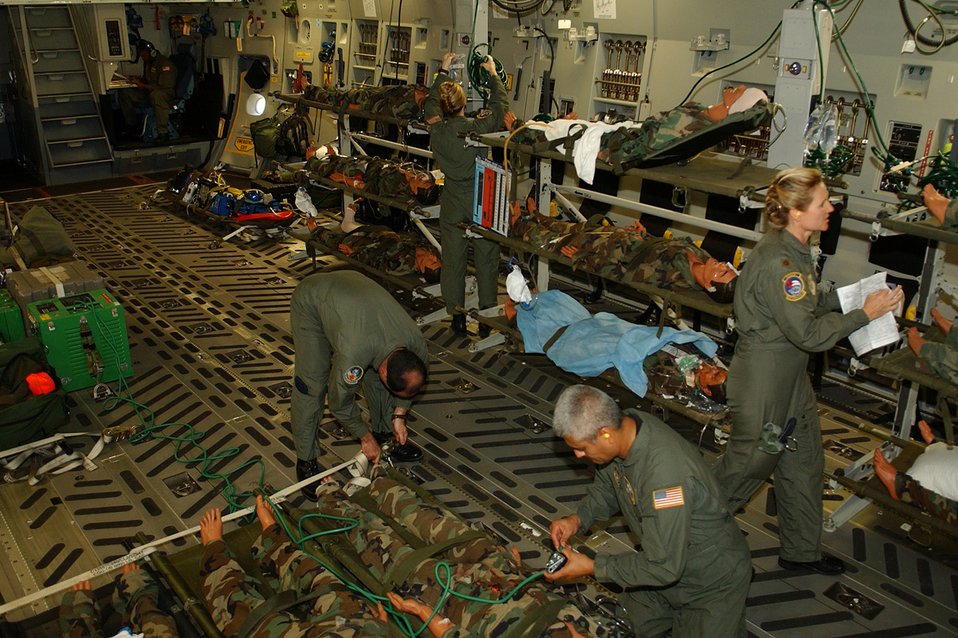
AFNORTH assisting with Gustav MedEvac

Aeromedical crews aboard a C-17 Globemaster III prepare patients for airlift from a Mobile AeroMedical Staging Facility recently. These types of operations are similar to current operations for Hurricane Gustav.